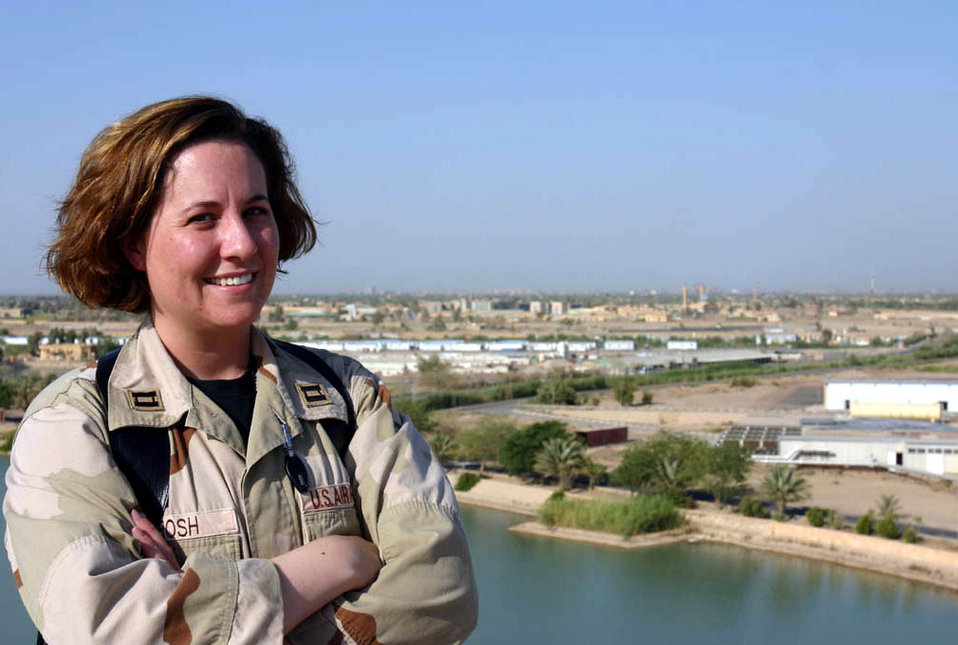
Air Force communications vital to Army effort in Iraq

BAGHDAD, Iraq -- Capt. Alycia Vrosh stands atop the Al Faw Palace on here ready to help Soldiers in directing communications efforts through Iraq. She has been deployed here for four months supporting Operation Iraqi Freedom.